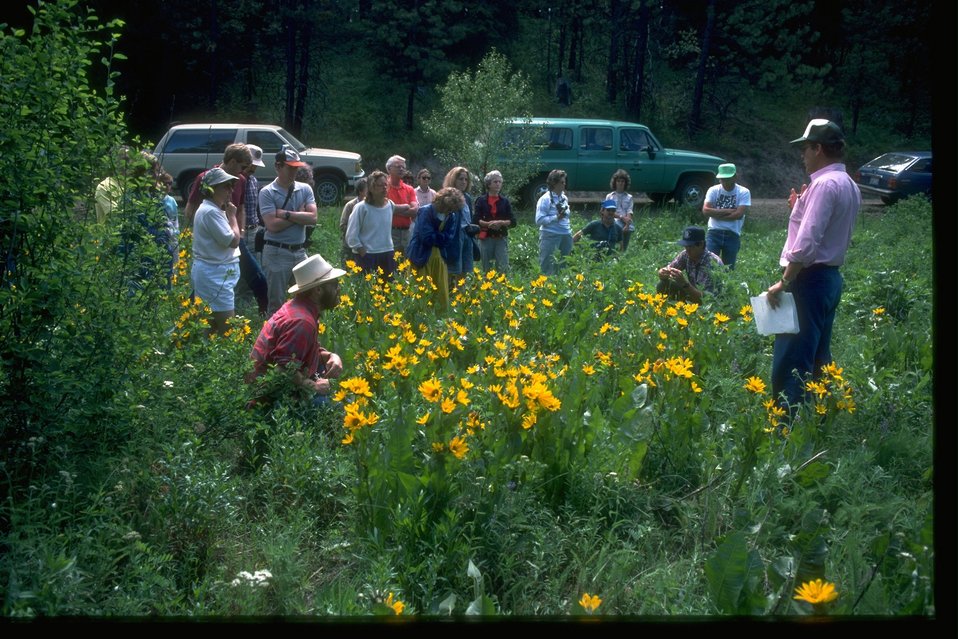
BLM hosts wildflower walks for the public.